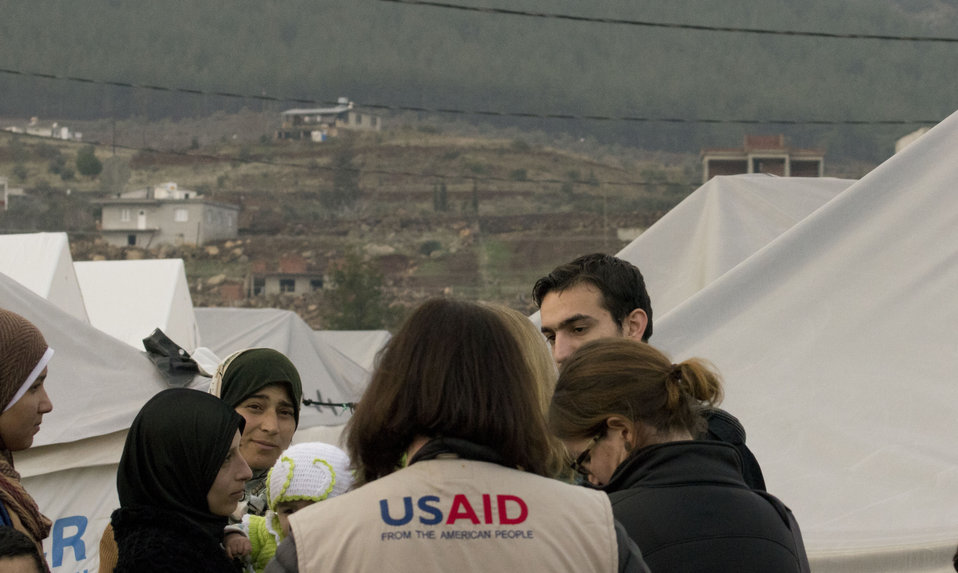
U.S. Delegation Visits the Islahiye Refugee Camp

A U.S. delegation visits Islahiye Refugee Camp in Turkey on January 24, 2013.